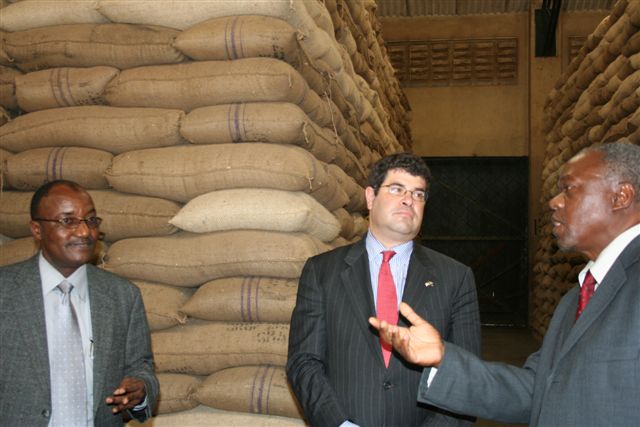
Deputy Secretary Neal Wolin’s trip to Africa 2009

Deputy Secretary Wolin is briefed on the function, operations and history of the NFRA facility. Another significant part of the U.S. Government’s support for food security in Tanzania is the Millennium Challenge Corporation’s (MCC) program to improve roads in many parts of the country, including the Sumbawanga – Tunduma road that forms a key part of the Tanzania - Zambia transport corridor and that will link to regions supported by NFRA.